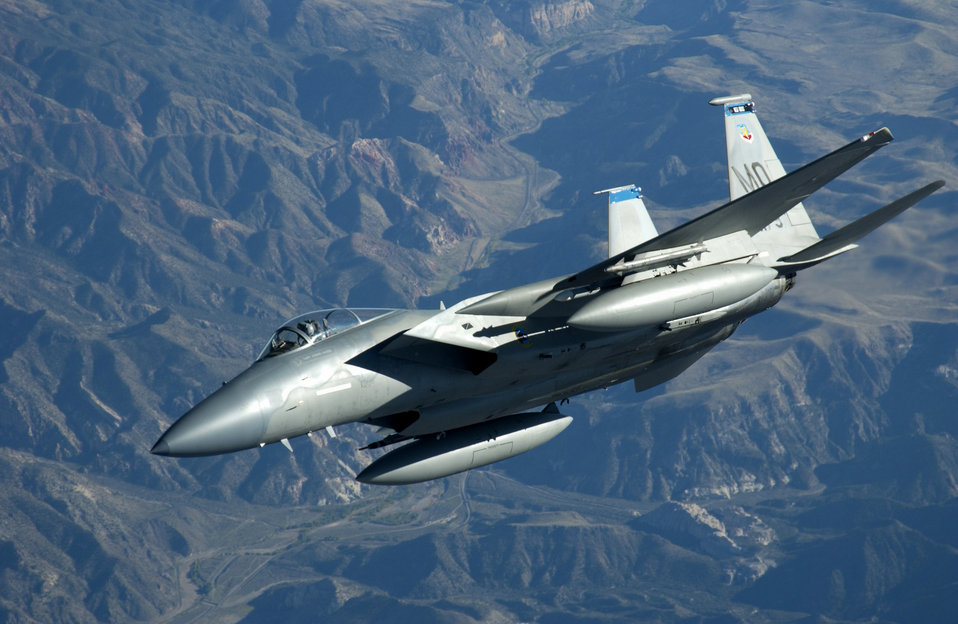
Airmen hone skills at Red Flag

An F-15 Eagle heads out to the range Oct. 19 during Red Flag 07-1 at Nellis Air Force Base, Nev.